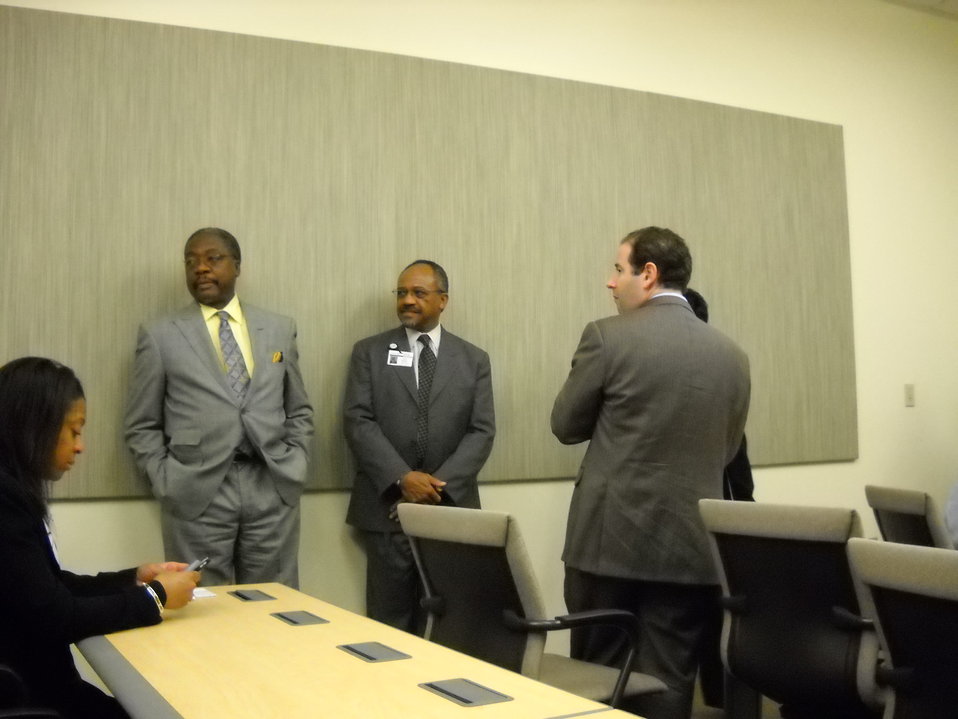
Field Hearing on Broadband Adoption 10-6-09